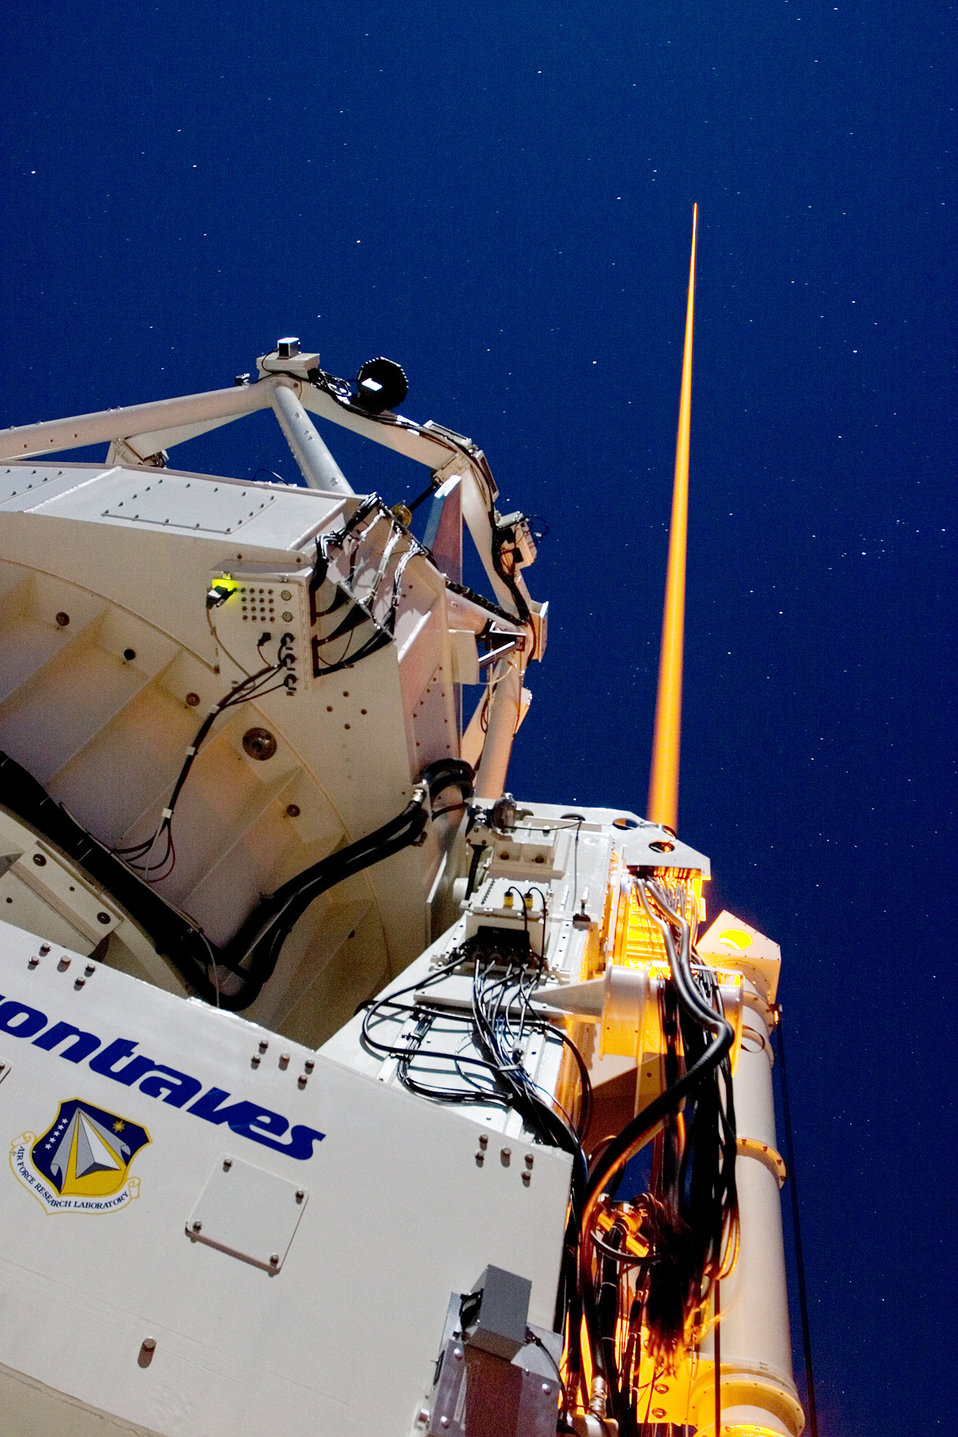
Tracking space clutter

The sodium guidestar provides real-time, high-fidelity tracking and imaging of satellites too faint for conventional optical systems. Scientists at the Air Force Research Laboratory's Starfire Optical Range at Kirtland Air Force Base, N.M., use this break-through technology to provide valuable space situational awareness capability.